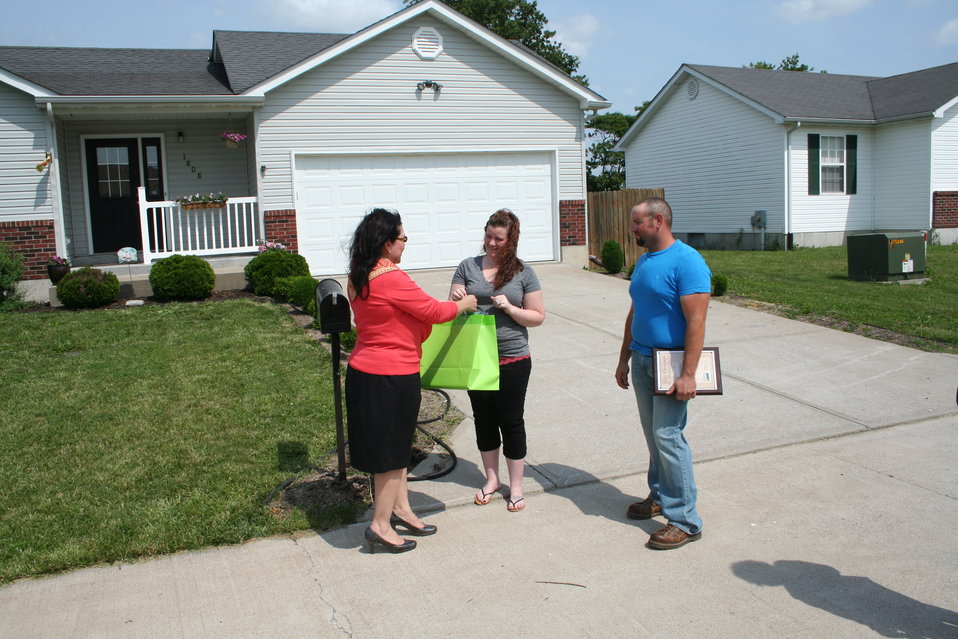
Worthington Homeownership Event-Bowling Green--13

A new home is created thanks to support from the U.S. Department of Agriculture’s (USDA) Rural Development (RD) Rural Housing Programs. (L to R USDA RD Rural Housing Administrator Trevino and new homeowners Michelle and Justin Worthington).